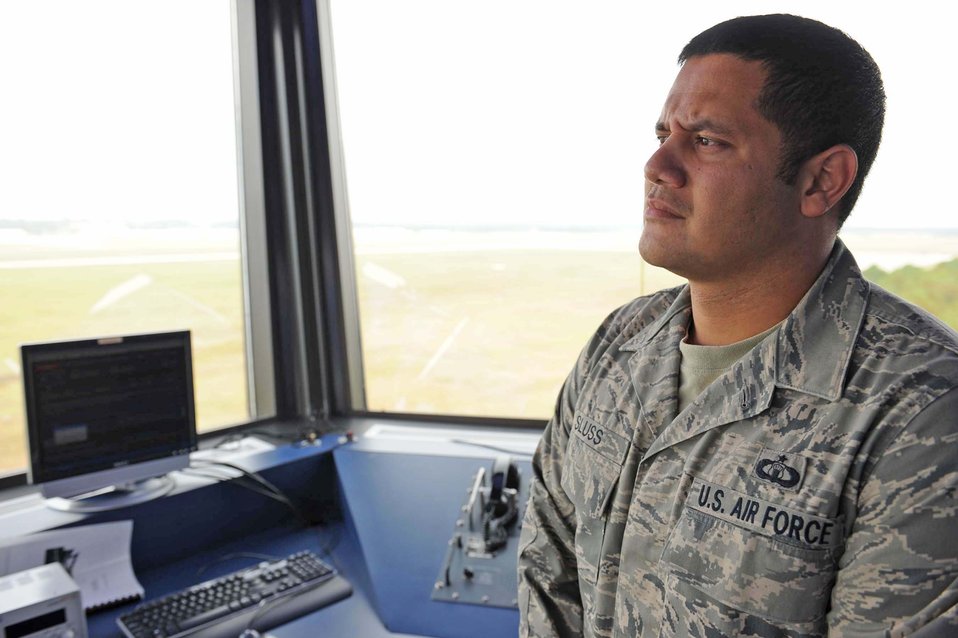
Shaw Airman saves boy's life

Tech. Sgt. Daniel Sluss was recognized by 20th Fighter Wing leaders for his lifesaving actions during a vacation in North Carolina Sept. 21, 2009, at Shaw Air Force Base, S.C. Sergeant Sluss, a 20th Operations Support Squadron air traffic controller, saved a boy who was drowning in the Atlantic Ocean.